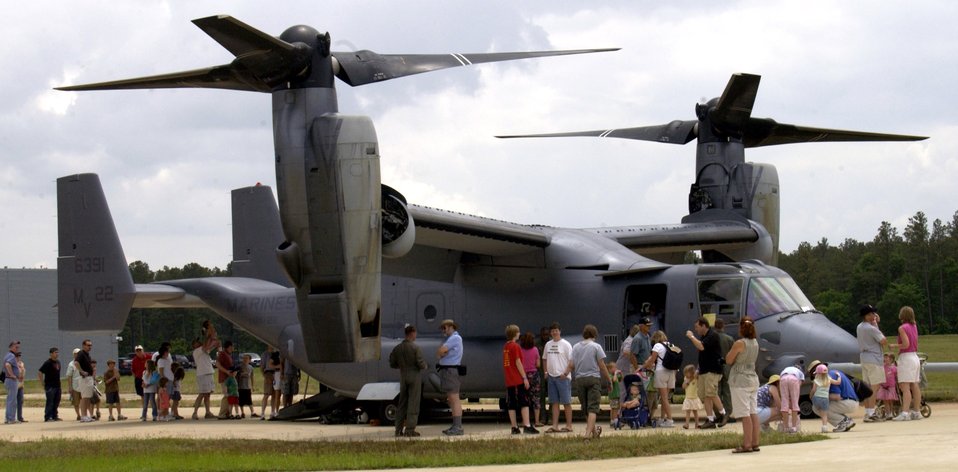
National Air and Space Museum family day wows visitors

Visitors gather around a Marine MV-22 Osprey at the